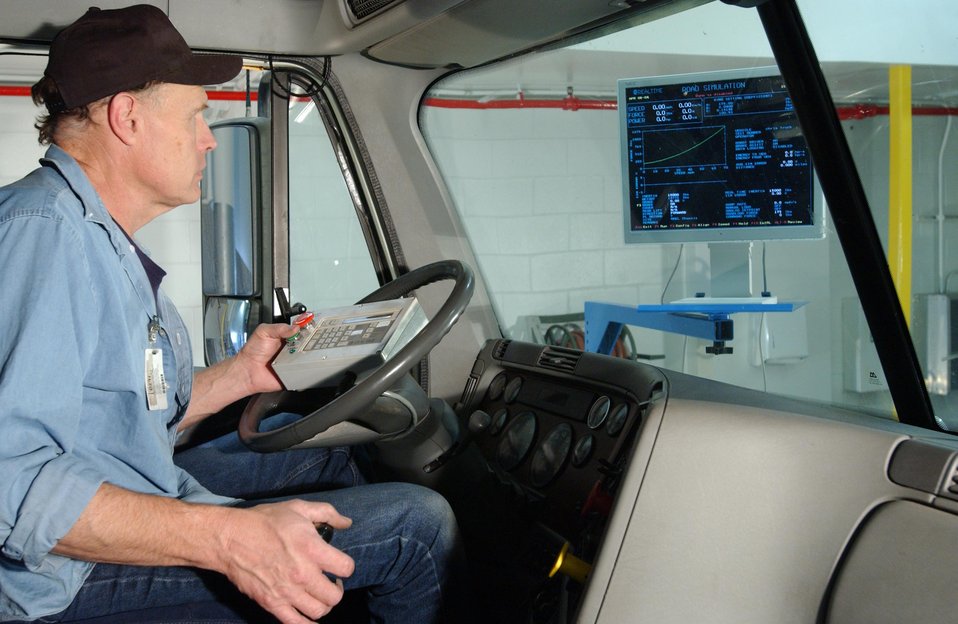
A driver's aid screen allows the driver to monitor a speed schedule in the chassis dynamometer at NREL's Renewable Fuels and Lubricants Laboratory (REFUEL).

NREL manages a nationwide endeavor to test and develop alternative and renewable fuels such as hydrogen, natural gas, ethanol, biodiesel, and advanced petroleum-based fuels. A unique high-altitude facility for renewable fuels and lubricants, known as Refuel Laboratory, test alternative and advanced fuels, lubricants, and heavy-duty transportation applications. Refuel is the first laboratory in the U.S. dedicated to researching and developing renewable and synthetic fuel and lubricants for heavy-duty transportation applications. It's also the only lab to evaluate the effects of operating heavy-duty vehicles at high altitude.